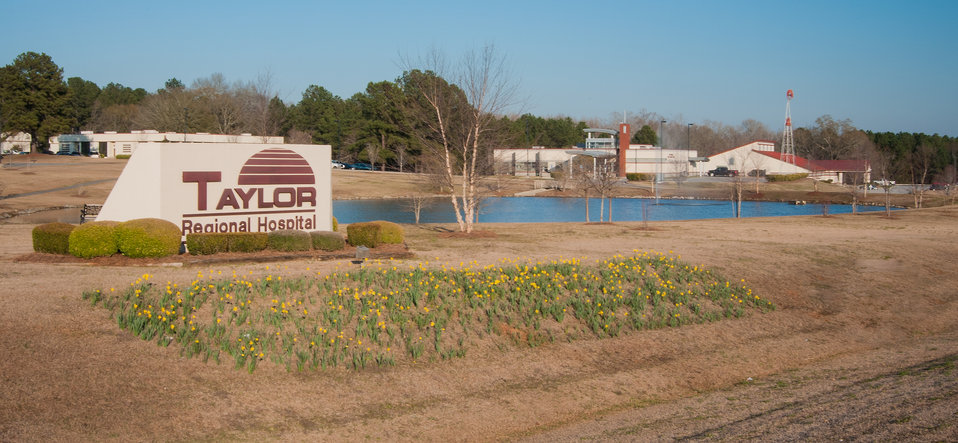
The R.J. Taylor Memorial Hospital on a sunny day in Hawkinsville, Pulaski County, GA on Mar. 6, 2013. This is the hospital’s main location and the facility is a licensed private, not-for-profit acute care facility providing emergency, specialty and primary health care. There is a second hospital located in Bleckly County, GA which provides services to residents in these two very rural counties of Georgia. These counties have a high percentage of people living below the state average poverty level and are considered the most economically distressed. The hospital has purchased an Electronic Medical Records System under an incentive program by the Federal government through the U.S. Department of Agriculture (USDA) Rural Development (RD) Community Facilities Loan (CF) that ensures fiscally responsive access to superior quality integrated health care.